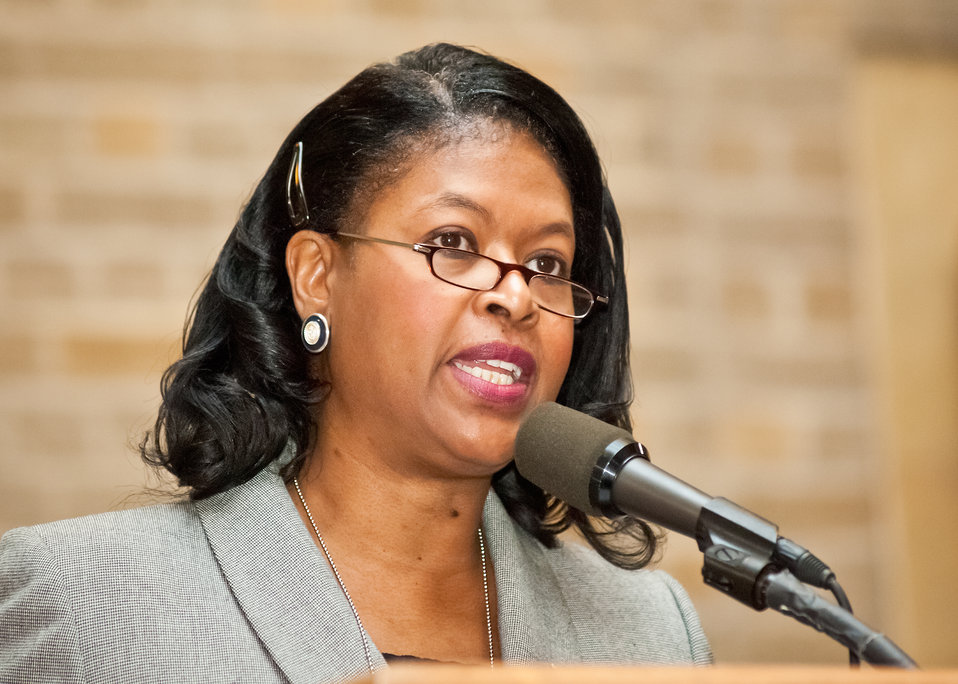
Associate Chief Information Officer, Technology Planning, Architecture and E-Government Yvonne Jackson welcomes employees and exhibitors to the U. S. Department of Agriculture (USDA), Section 508 and Disability Awareness Program at USDA in Washington, DC, on Monday, Oct. 31, 2011. Sponsored by the Office of the Chief Information Officer, the theme of the event was, “Turning the Key to Unlock and Eliminate Barriers by Providing Accessibility to All.” Section 508 applies to the development, procurement, maintenance or use of electronic and information technology allowing accessibility and awareness to promote inclusiveness to employees and the public with disabilities to information technology managed by the Federal government. Section 508 is part of the USDA’s Cultural Transformation Initiative to hire more employees with disabilities.